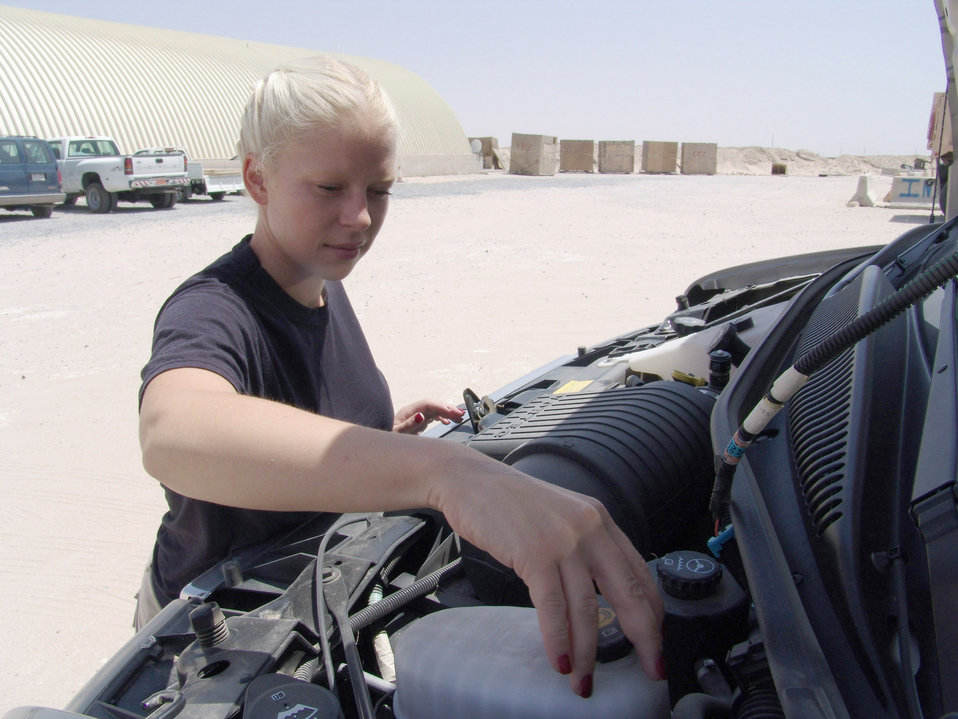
Plenty of fluids

SOUTHWEST ASIA -- Staff Sgt. Bethany Elder checks the fluid levels on a passenger van here July 20. She is a vehicle operator assigned to the 386th Expeditionary Logistics Readiness Squadron at a forward-deployed location. Sergeant Elder is part of a five-person team deployed here from the 347th Rescue Wing at Moody Air Force Base, Ga.